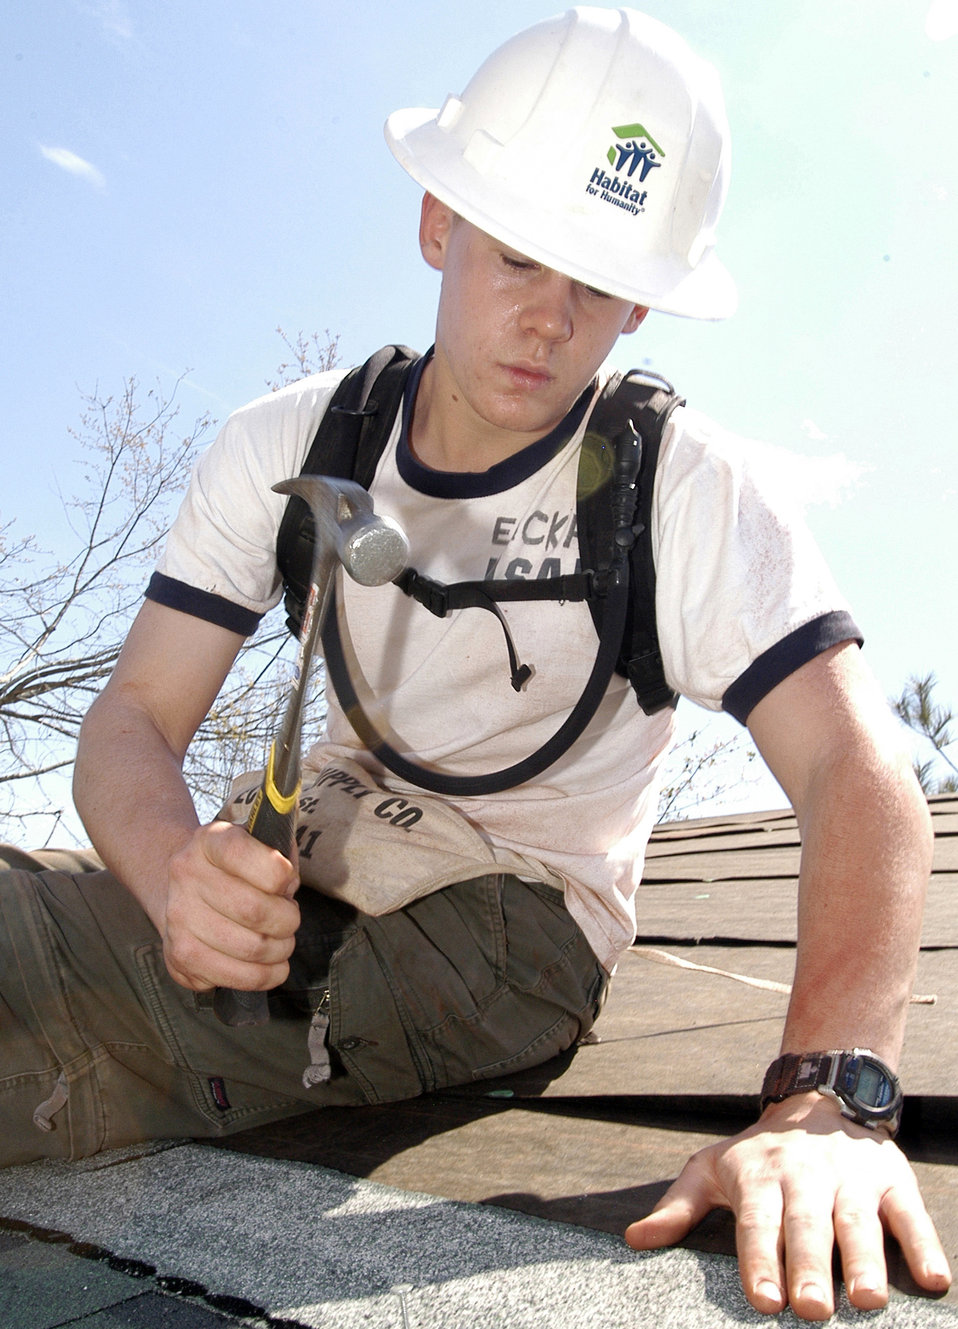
Alternate Spring Break 2006

Cadet 4th Class Casey Eickholt from the Air Force Academy works with Habitat for Humanity in Hattiesburg, Miss., to install shingles on a newly constructed house on Monday, March 27, 2006. Approximately 140 cadets volunteered their spring break to help rebuild the disaster-struck area in Biloxi, Miss.